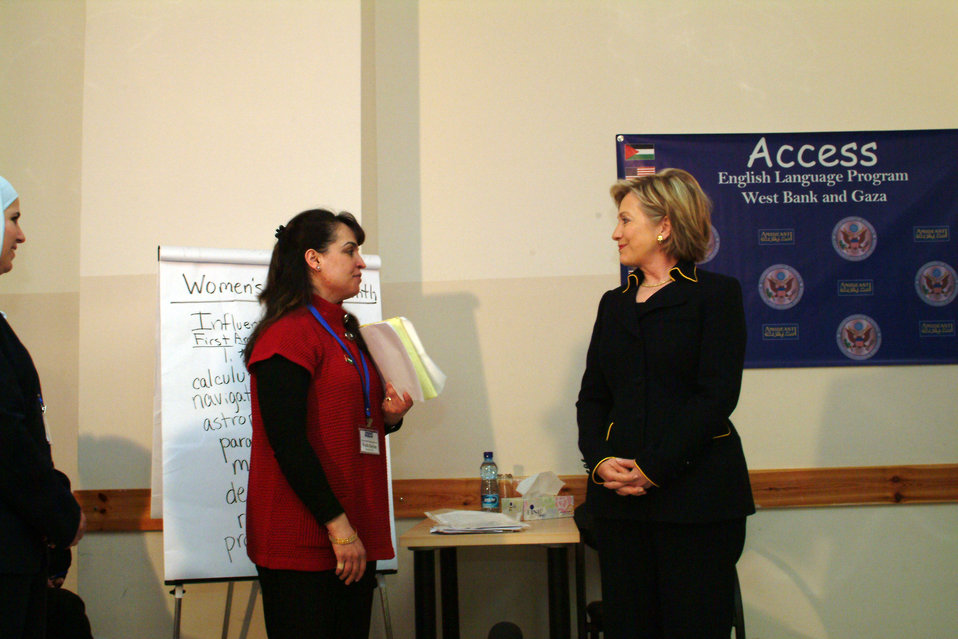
Secretary Clinton Attends Amideast Event

Secretary Clinton at an Amideast event in Ramallah March 4, 2009.